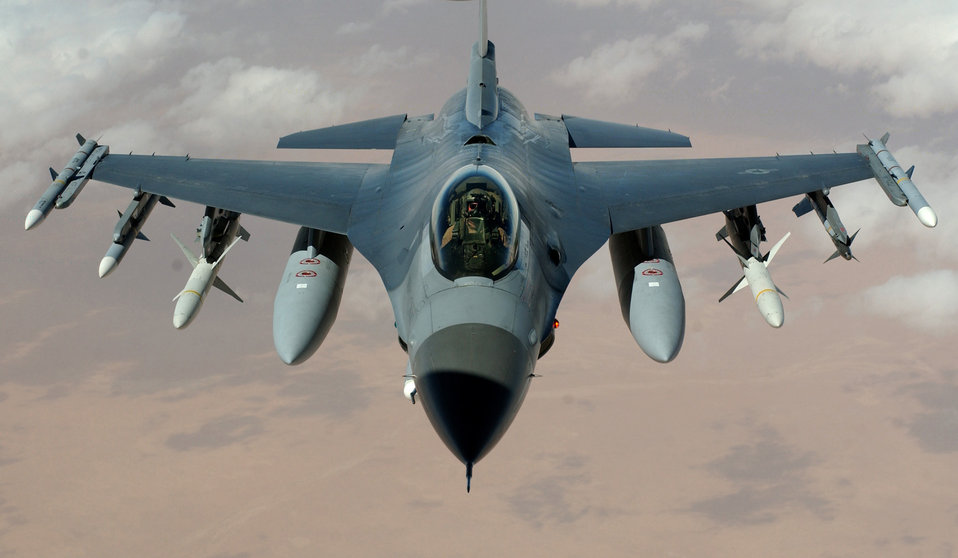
Wild Weasels

OPERATION IRAQI FREEDOM -- An F-16 Fighting Falcon flies a mission in the skies near Iraq on March 22. The F-16s are from the 35th Fighter Wing